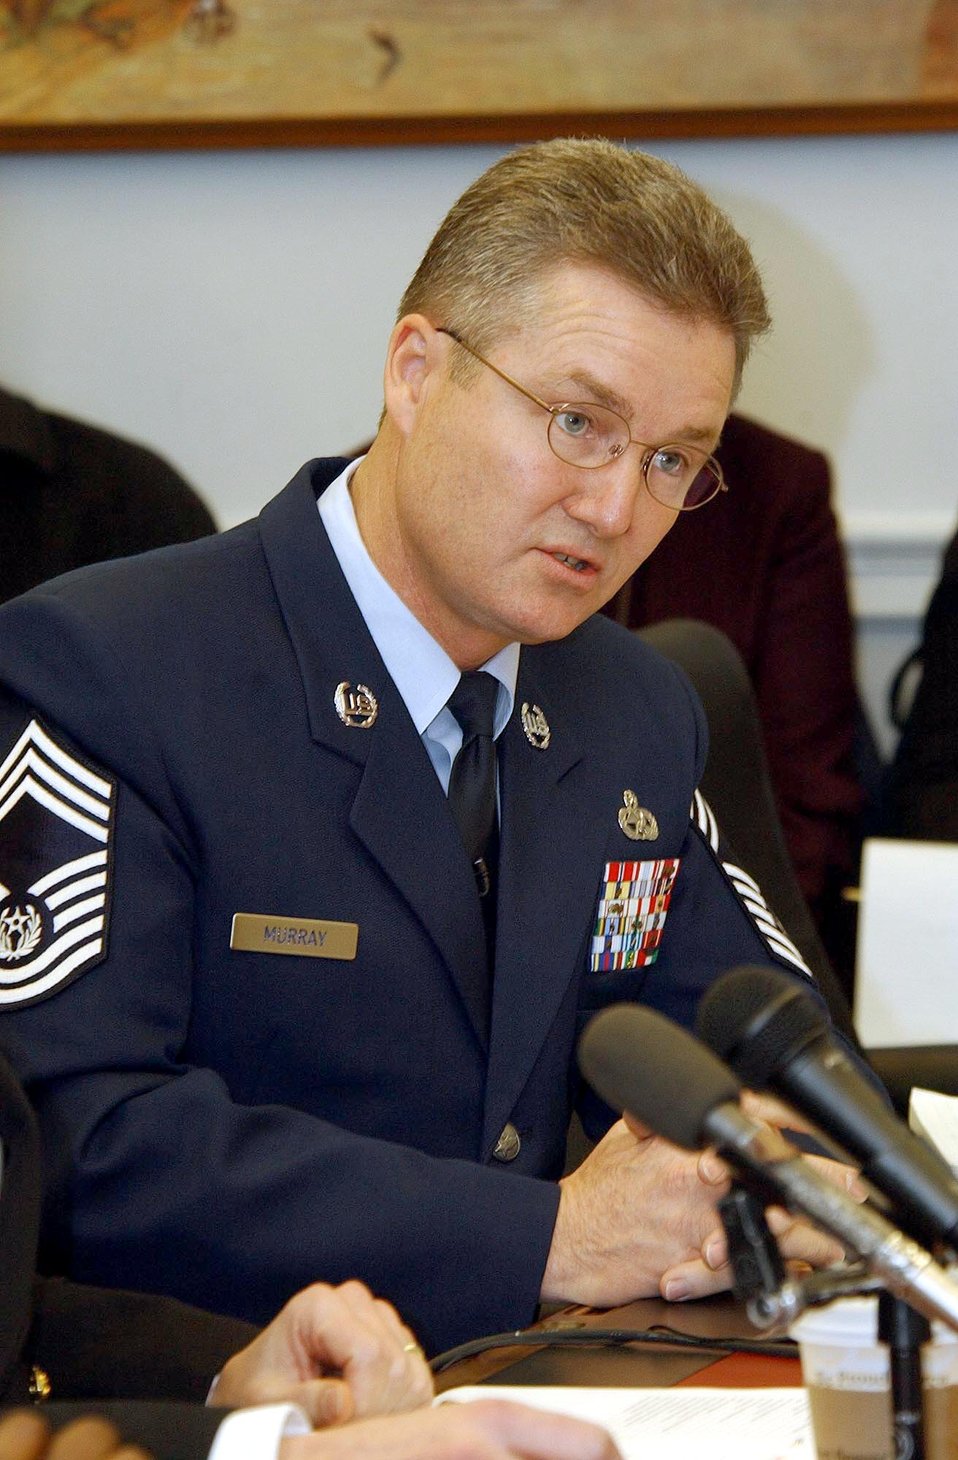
Chief Murray talks quality of life

WASHINGTON -- Chief Master Sgt of the Air Force Gerald R. Murray answered questions during a congressional hearing Feb. 25 about quality-of-life issues in the military. Chief Murray said morale today is the best he has seen it.